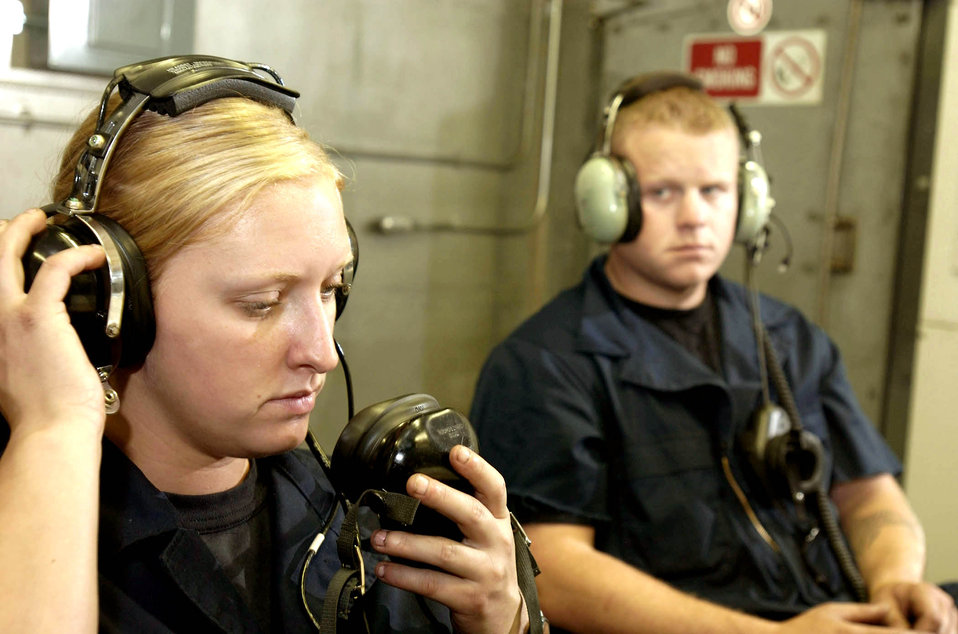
Hush, hush

RAMSTEIN AIR BASE, Germany -- Senior Airman Amanda Shetley talks to the noncommissioned officer in charge of the hush house here as Staff Sgt. David Stabbins listens in before a C-130 Hercules engine test. The hush house was originally made for conducting engine tests for the F-16 Fighting Falcon. The 86th Maintenance Squadron's propulsion flight is a centralized intermediate repair facility making it the focal point for any C-130 engines needing repairs in Europe or for operations Iraqi Freedom and Enduring Freedom.